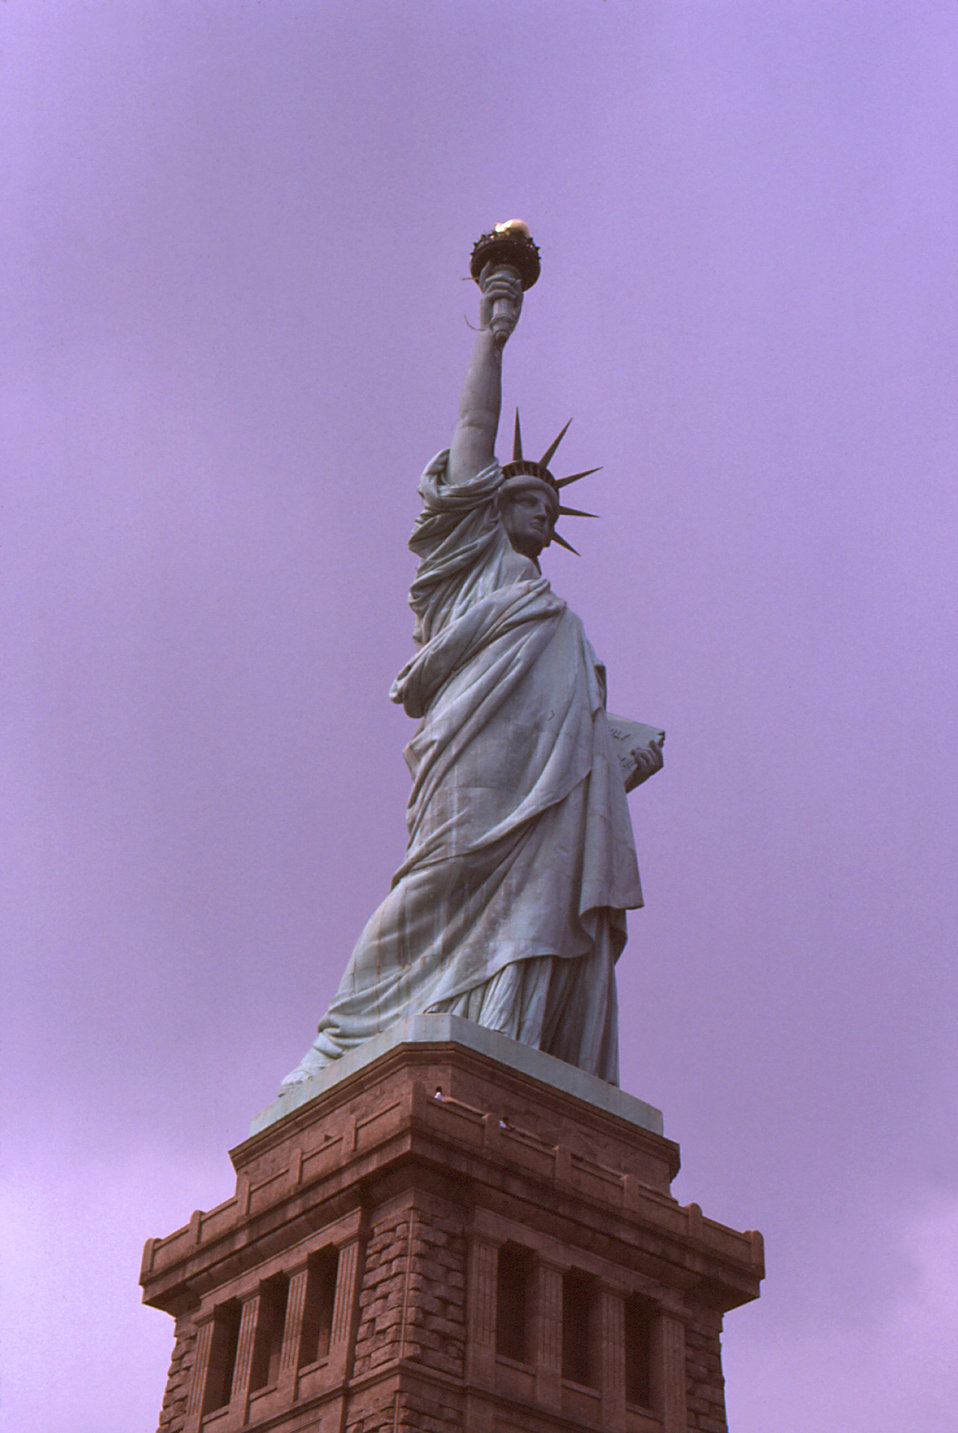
This photograph depicted the Statue of Liberty, the centerpiece of the Statue of Liberty National Monument. The statue was a gift to the people of the United States from the people of France, in recognition of their friendship from the time of the American Revolution (1776 - 1783). Built in France, and assembled in the United States, the statue was dedicated on October 28, 1886. The height from the base to the torch is 152 feet, 2 inches (1984 survey). Although associated generally with New York City and State, the statue is actually located in New Jersey.